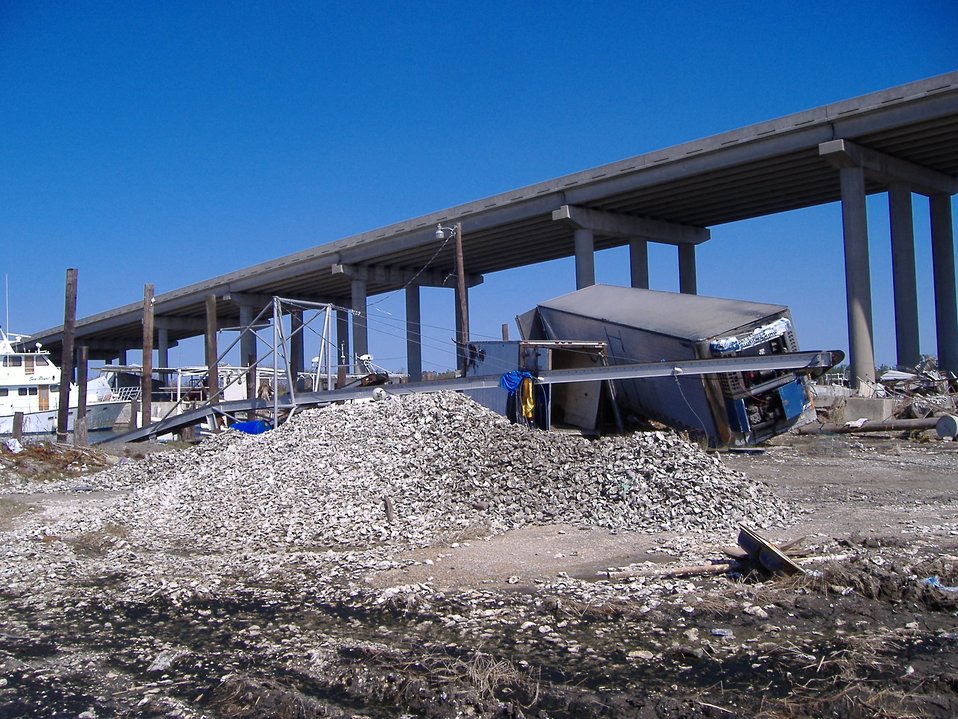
The aftermath of Katrina. U.S. Coast Guard operations center at Empire, Louisiana.